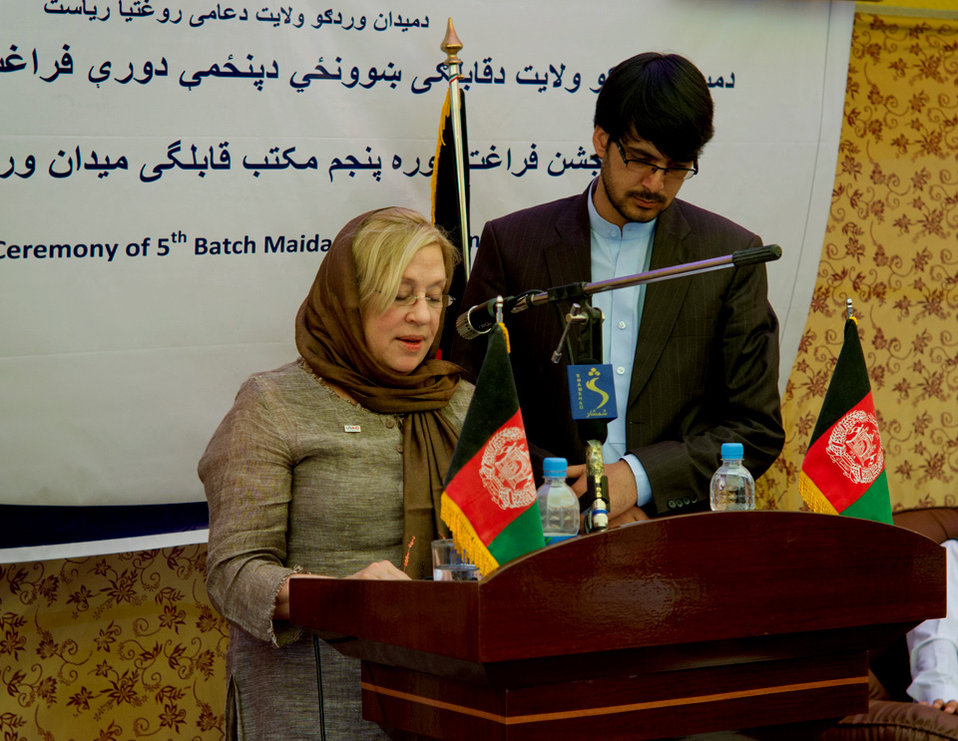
Carol Horning Speaking